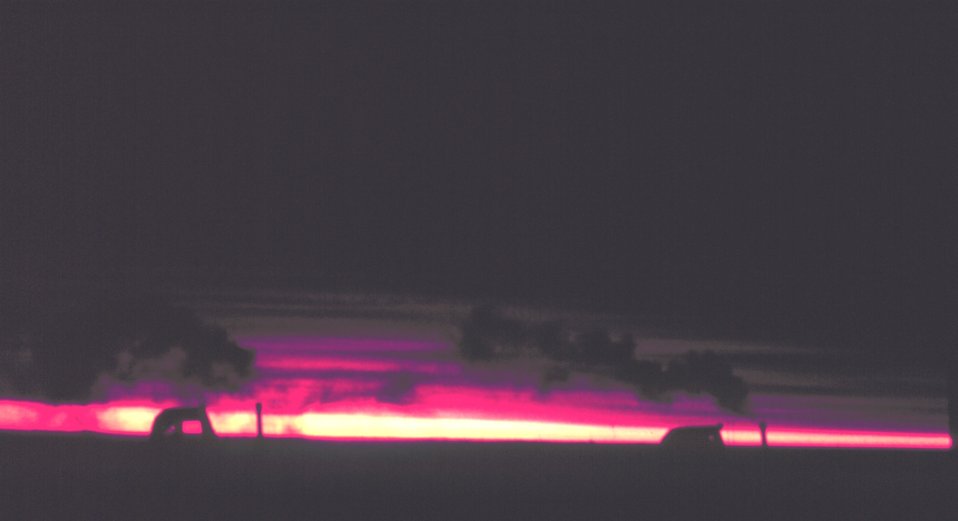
Tractors chugging away in the polar sunset